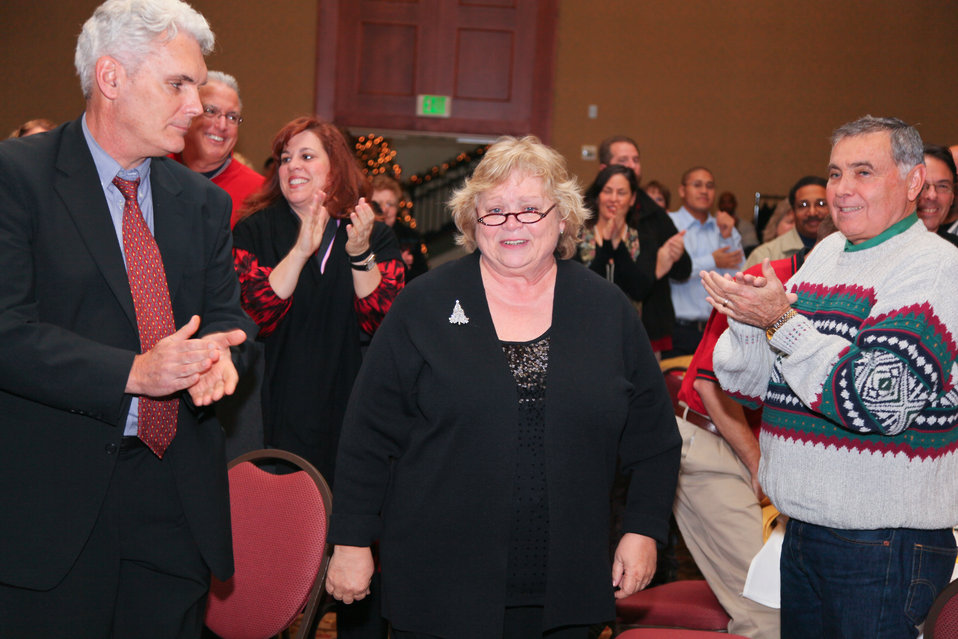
Fifty Years of Service

SACRAMENTO, Calif. (Dec. 20, 2010) - Sharon Caine (center), chief of the real estate division for the U.S. Army Corps of Engineers Sacramento District, receives a standing ovation by fellow district employees for her recognition of fifty years of federal service here Dec. 17.